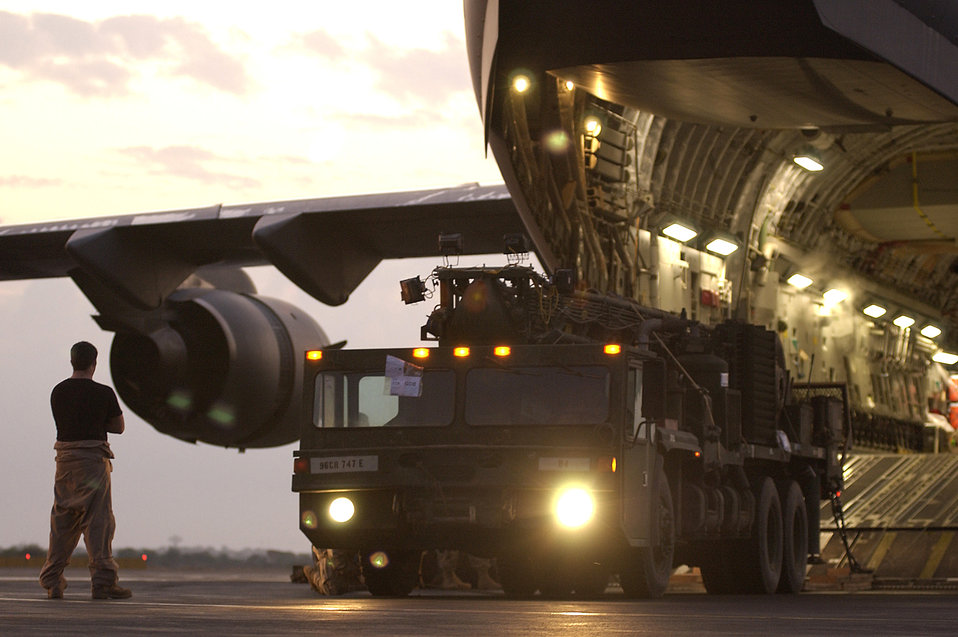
Horn of Africa

CAMP LEMONIER, Djibouti (AFPN) -- Senior Airman Jake Wyatt watches Soldiers load their well rig onto a C-17 Globemaster III aircraft. Airman Wyatt is one of many Airmen supporting the Army's operations in the Horn of Africa. He is a loadmaster from the 14th Airlift Squadron at Charleston Air Force Base, S.C.